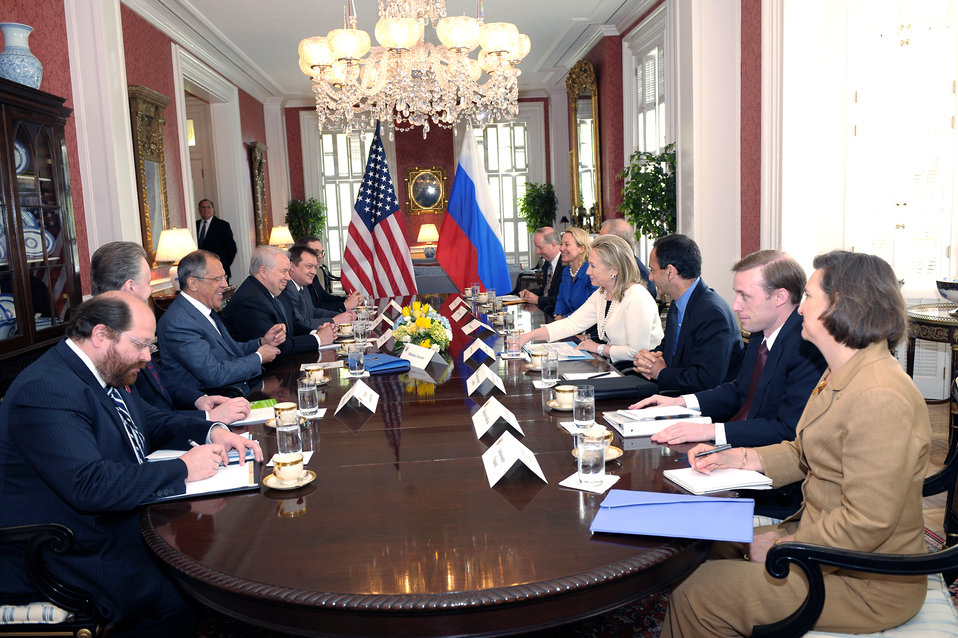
Secretary Clinton Meets With Russian Foreign Minister Lavrov

U.S. Secretary of State Hillary Rodham Clinton holds a bilateral meeting with Russian Foreign Minister Sergey Lavrov during the G8 Ministerial at the Blair House in Washington, D.C., on April 12, 2012.